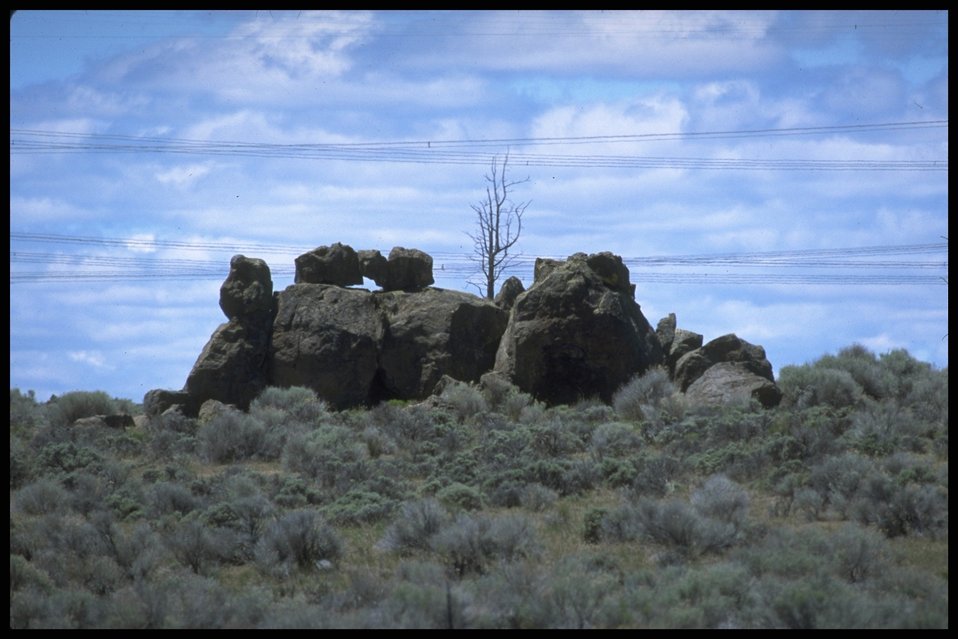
Far shot of Locomotive Rock, Lakeview District.